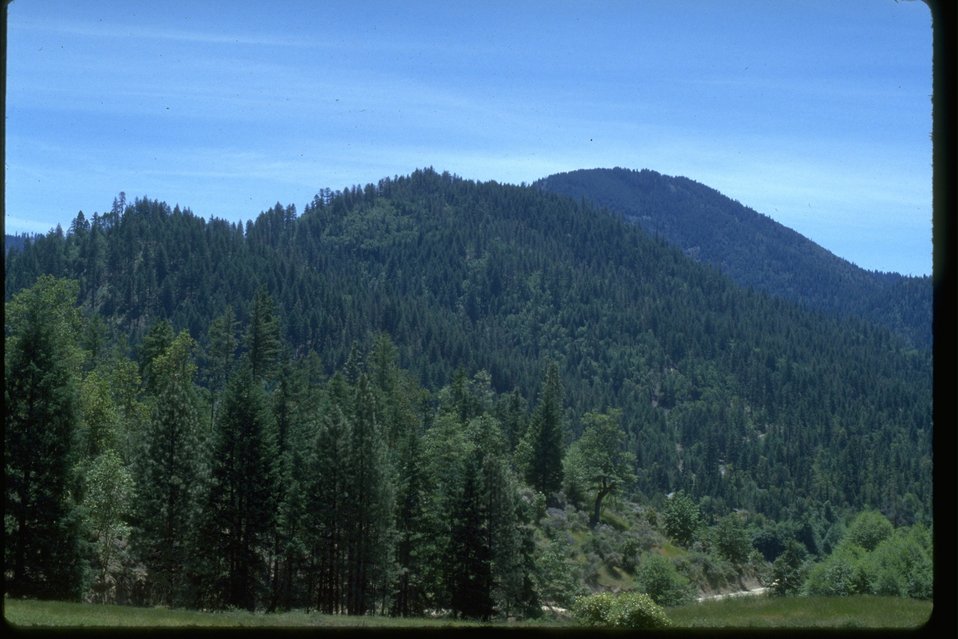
A timber treatment area around Thompson.